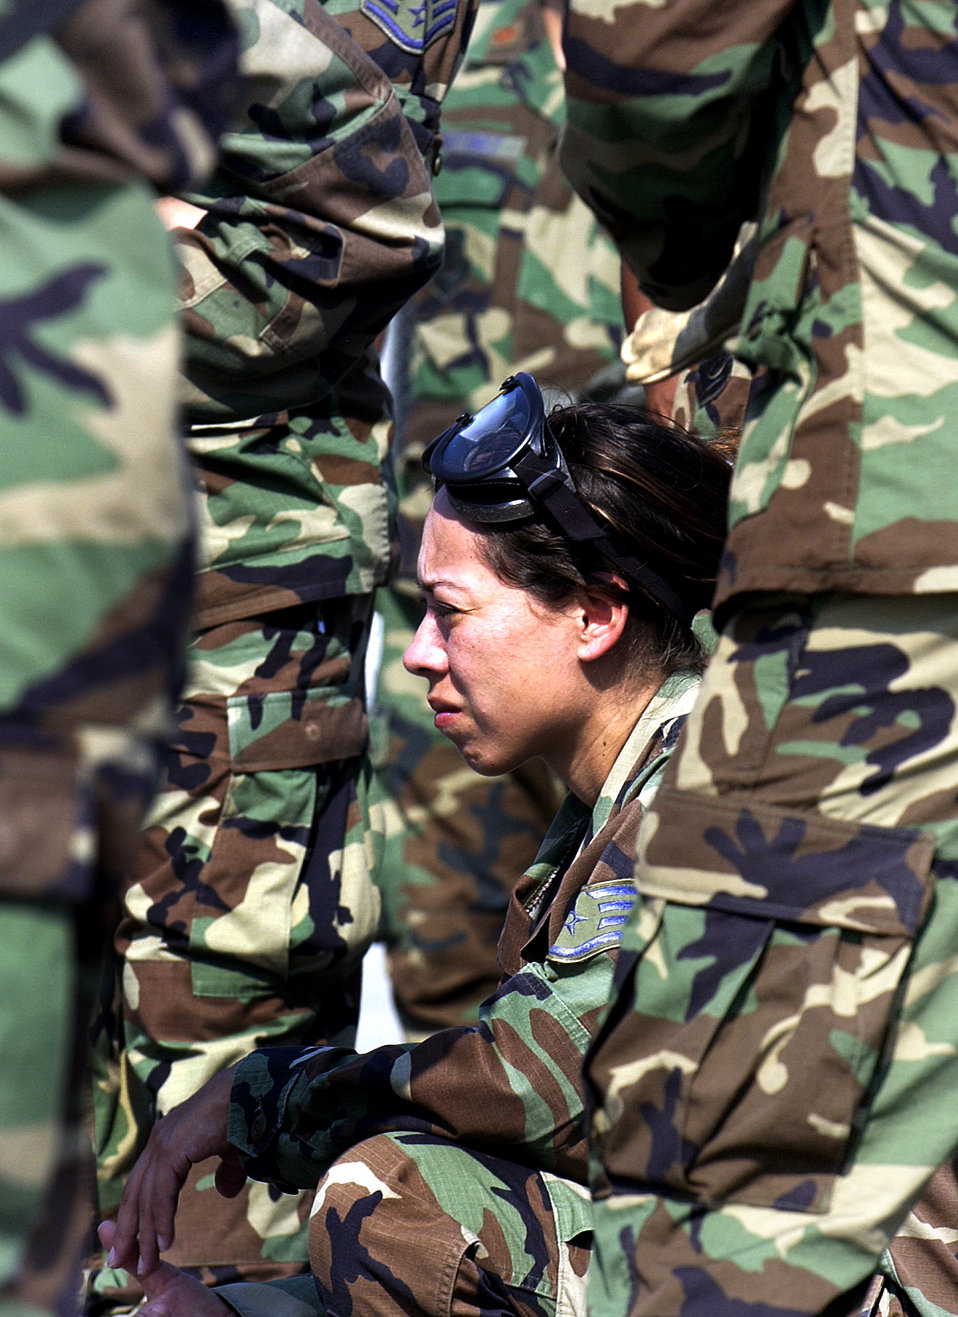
Airmen, Soldiers polish skills at Golden Medic

Staff Sgt. Christina Reyna kneels down to observe the loading and unloading of patients onto a C-130 Hercules at Augusta Regional Airport, Ga., on Thursday, June 15, as part of Golden Medic 2006. The annual medical exercise involves medical servicemembers from various military branches, including the Air Force and Army this year. Sergeant Reyna is assigned to the 433rd Aeromedical Evacuation Squadron at Lackland Air Force Base, Texas.